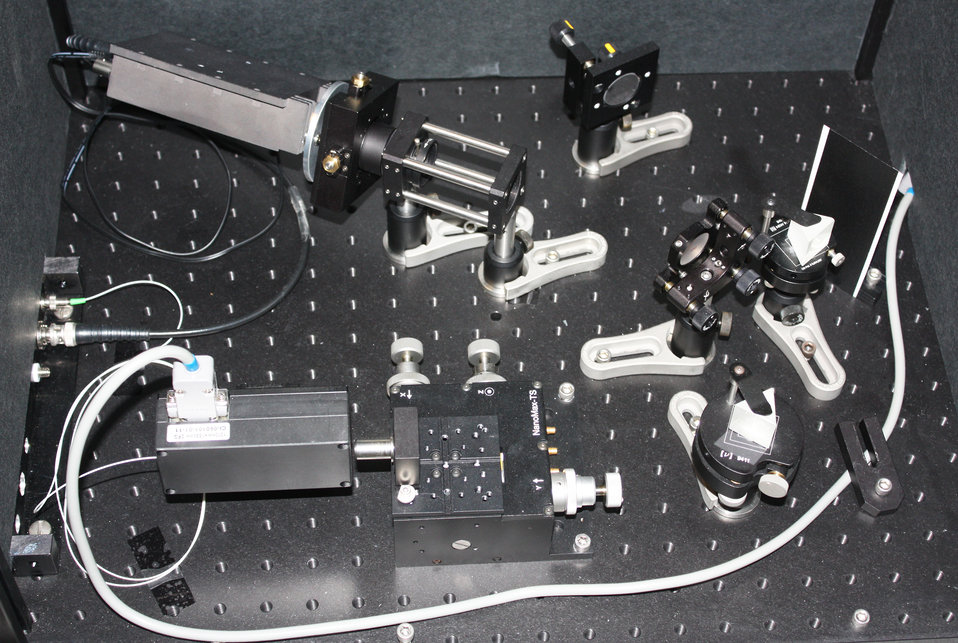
Frequency Converter; Ultra-High Sensitivity Infrared Spectrometry